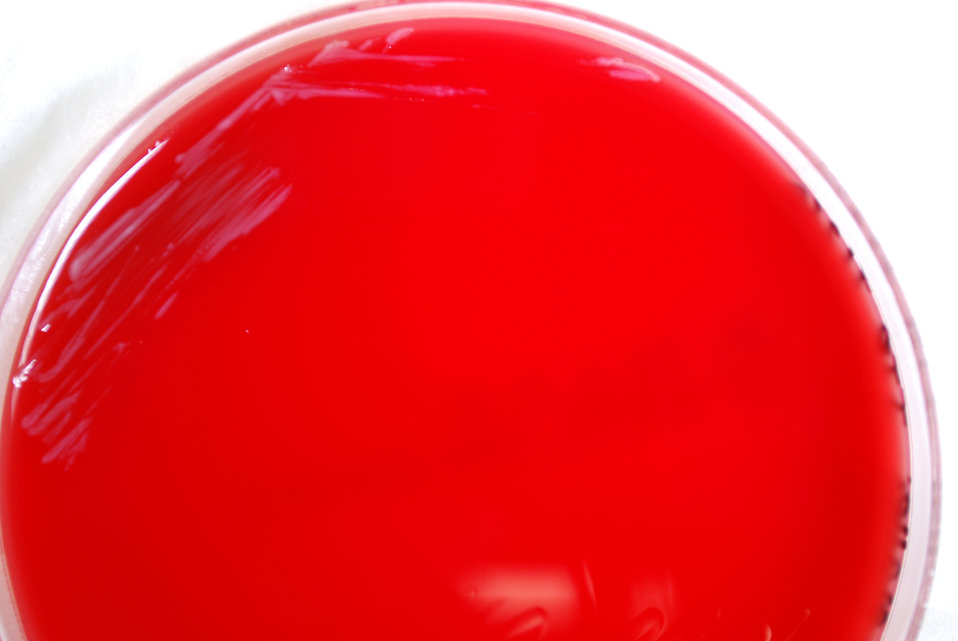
As a closer view of PHIL 12218, this photograph depicts the colonial morphology displayed by Gram-negative Burkholderia mallei bacteria, which was grown on a medium of sheep's blood agar (SBA), for a 24 hour time period, at a temperature of 37�C. B. mallei is the cause for the disease known as glanders.What are the symptoms of glanders?